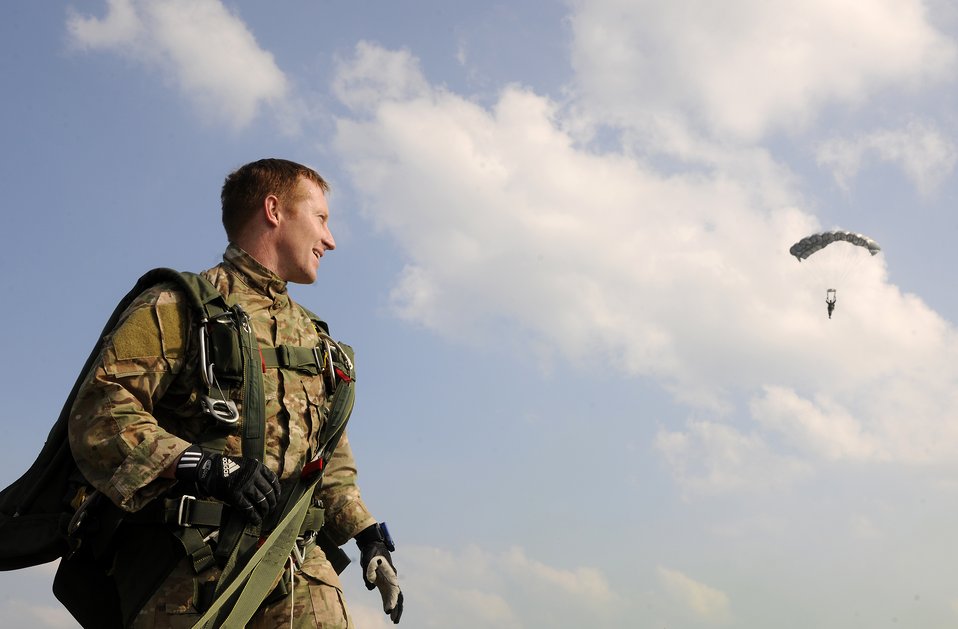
Ready, jump!

An Air Force survival, evasion, resistance and escape specialist watches as other specialists descend from the sky during a parachute jump Sept. 15, 2011, in Cheongju, South Korea.